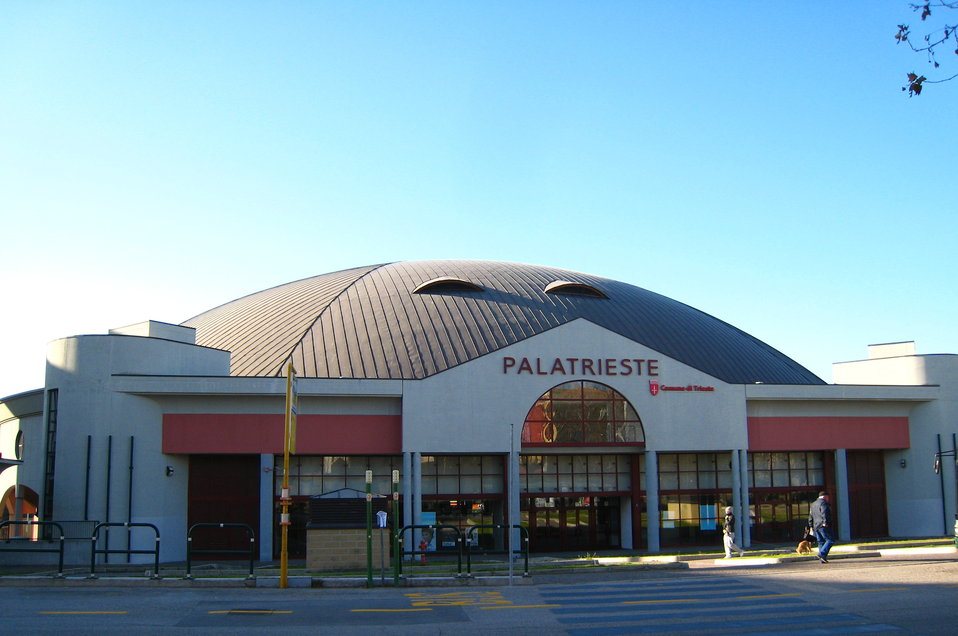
Italiano: Il palazzetto dello sport di Trieste. Dicembre 2007